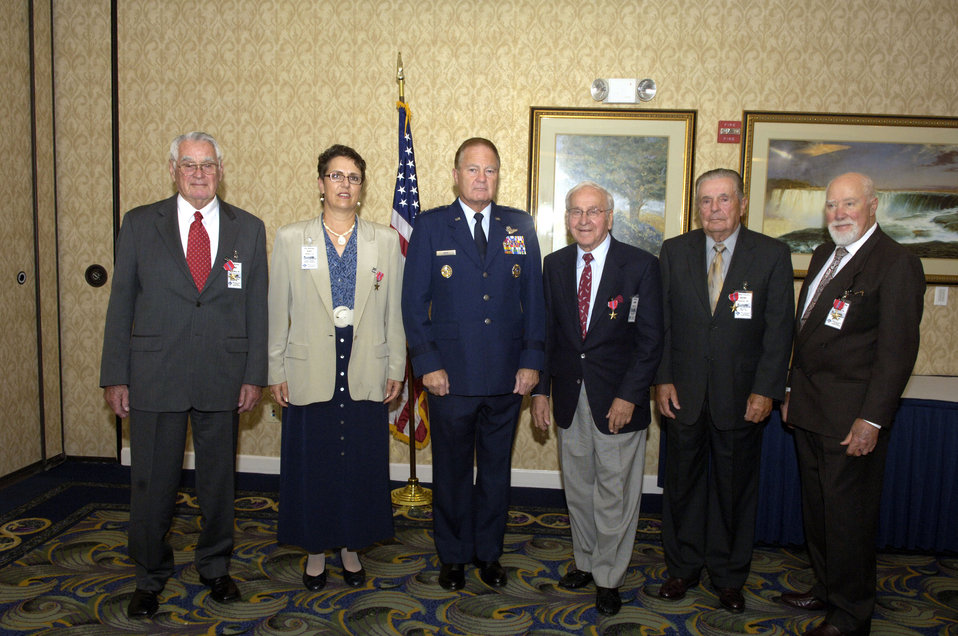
World War II vets receive Bronze Stars after 62 years

Gen. Ronald E. Keys poses for a photo with John McCurdy, Kay Nehring (daughter of Charles Nehring), John Bucko, Eugene Peterson and Francis Goldberg. The five received long overdue Bronze Stars for their heroism during World War II. Ms. Nehring's father was unable to make the trip so she accepted the medal for him. The paperwork for the medals had been misfiled and rediscovered more than 60 years later. The men were unaware they were supposed to receive the medals. General Keys is commander of Air Combat Command.